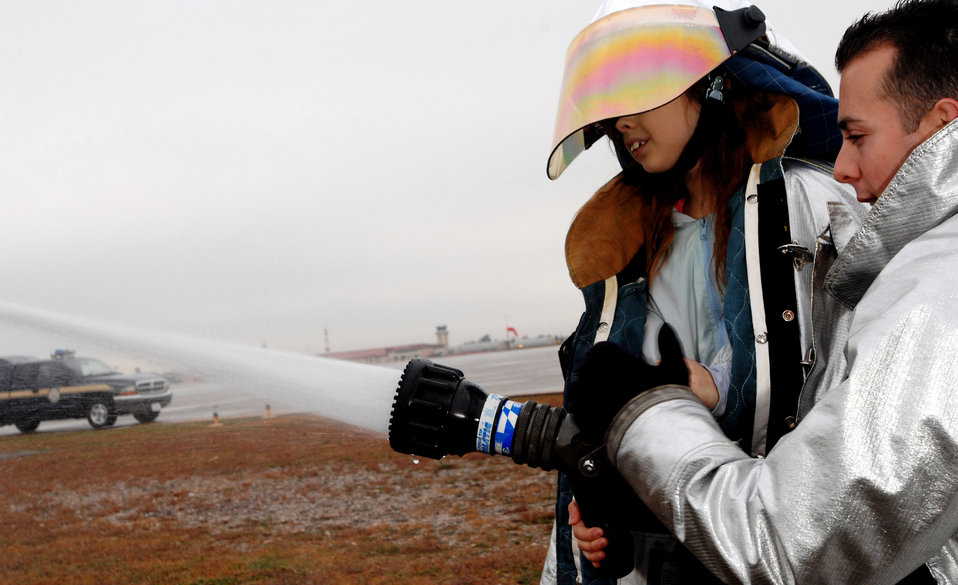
Warrior for a day

Airman 1st Class Christopher Gonzalez helps 2nd grader Alexa Arancubia use an attack hose during a children's deployment day Oct. 24 at Aviano Air Base, Italy. Alexa is the daughter of Tech. Sgt. Abel Arancubia and Jennifer Arancubia. Airman Gonzalez is a firefighter with the 31st Civil Engineer Squadron.